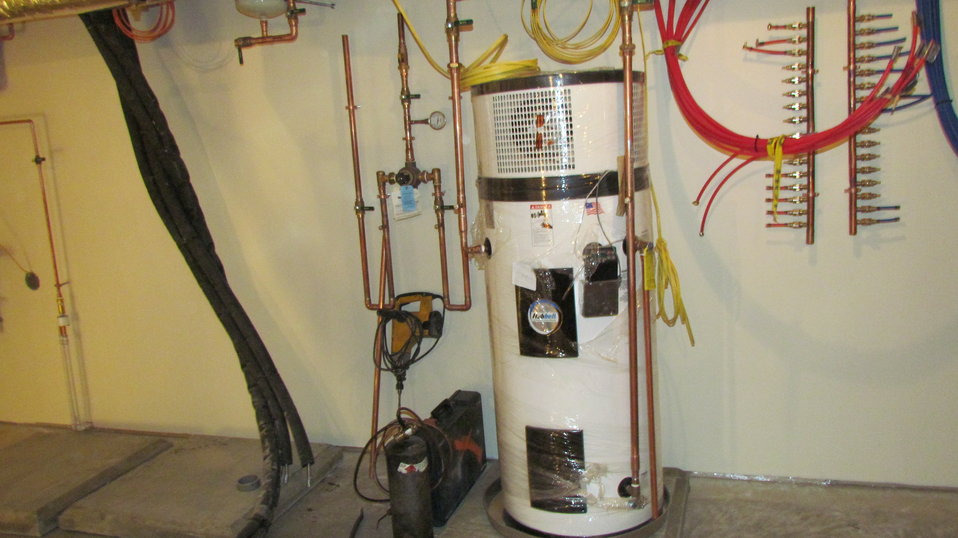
Photo showing installation of heat pump water heater. This unit supplies domestic hot water if the solar system is unable to meet the hot water deands due to poor weather conditions.